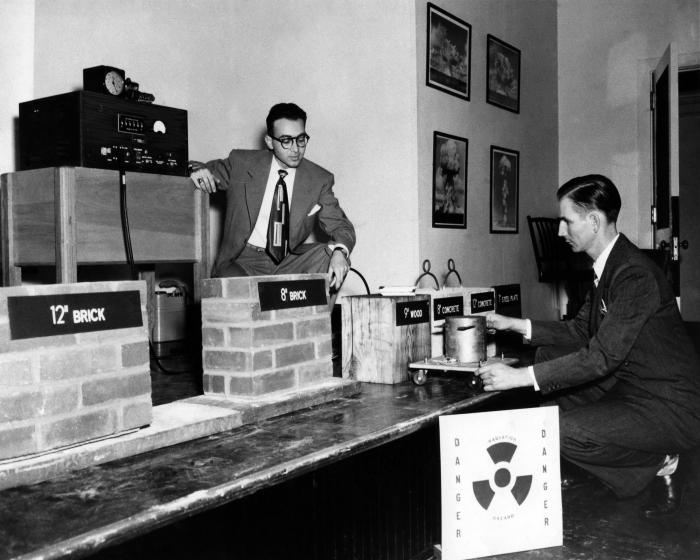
This historic 1950 image, provided by the Center for Disease Control's (CDC), National Institute for Occupational Safety and Health (NIOSH), depicted two men wearing business suites, who were in the process of setting up a display based on information pertinent to the study of atomic energy, and properties associated with radioactivity. This image was published in a 1951, edition of the 'Industrial Hygiene Newsletter'. Judging from the image, which showed a number of blocks of various materials including (Lt. to Rt.) a 12'-thick brick and mortar block, an 8'-thick brick and mortar block, a 9'-thick wood block, an 8'-thick concrete block, a 12'-thick concrete block, and a 1'-thick steel plate, leads one to believe that this was a display depicting how materials withstand the blast of an atomic bomb (see pictures on the wall at right), or how far radiation penetrates various materials of varying thicknesses?